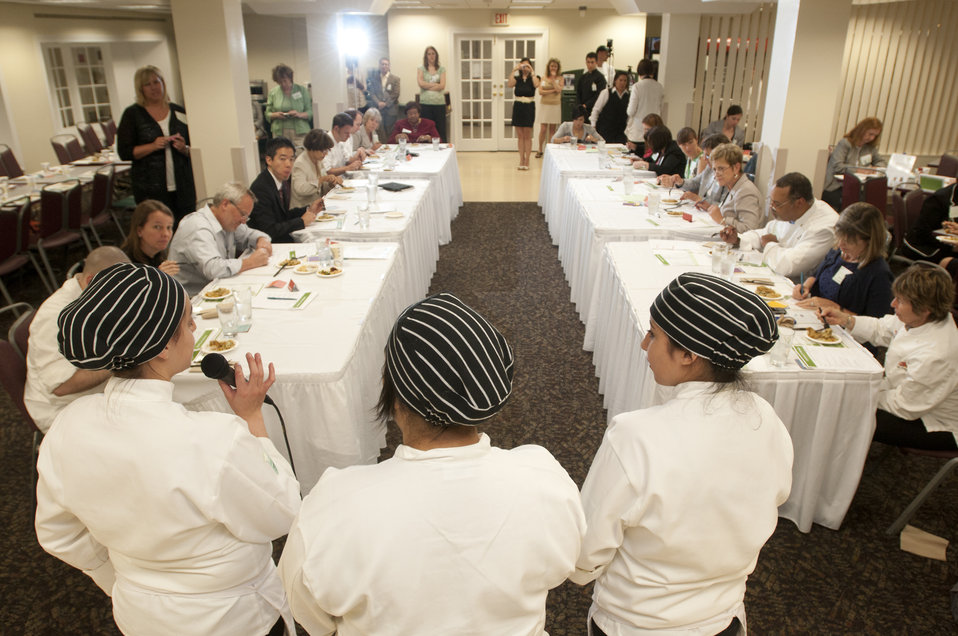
Denver's Livewell team (l-r) Brenda Alococer, Edna Rodriguez and Suzi Hernandez take turns during the team's presentation and question and answer session, during the Cooking Up Change, National Healthy Cooking Competition at the USDA in Washington, DC, on Monday, May 23, 2011.